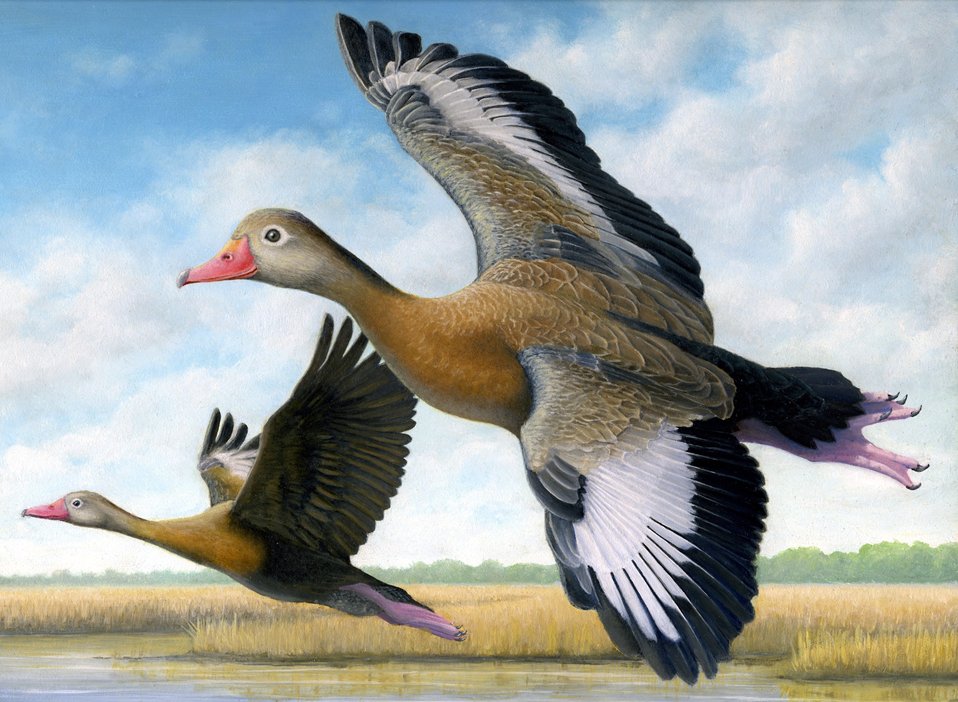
Georgia

2012 Jr Duck Stamp Program
State Best of Show
Georgia